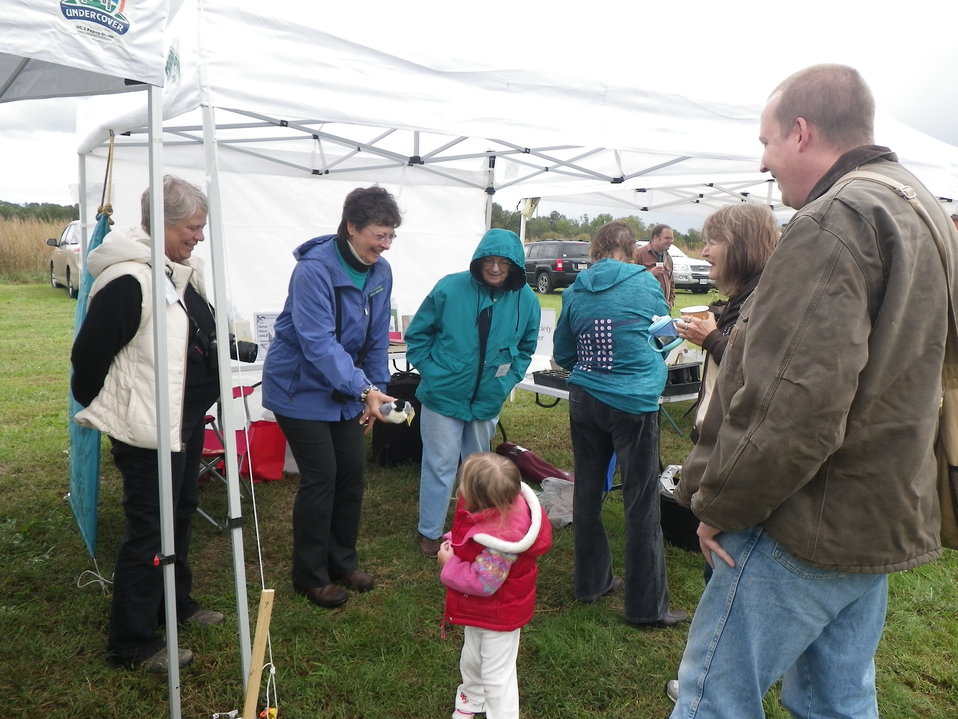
Rappahannock River Valley NWR 15th Anniversary

Attendees visit the Audubon Society exhibit at 'Go Wild!'